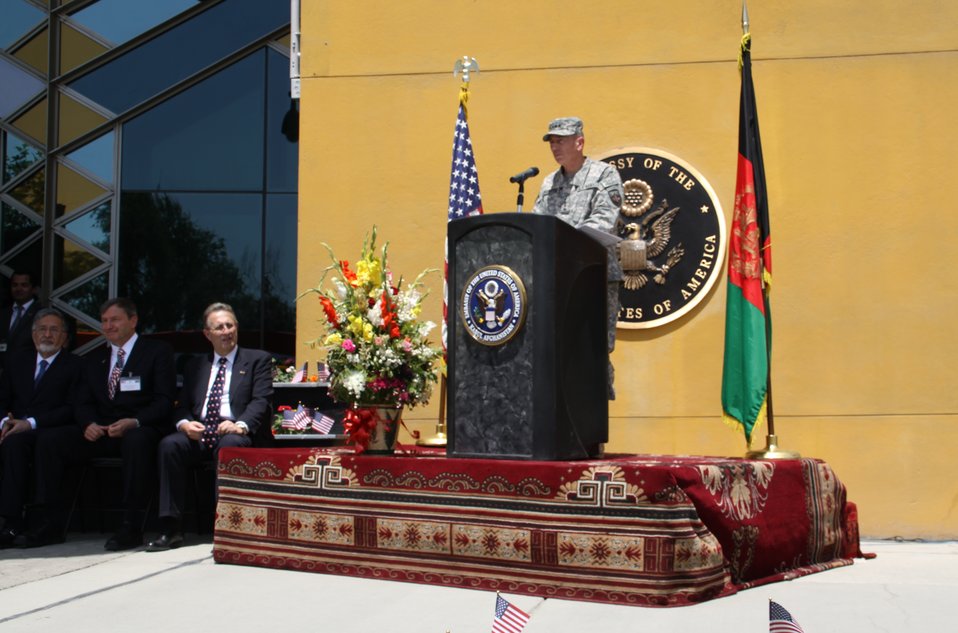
Kabul Official July 4th Celebration